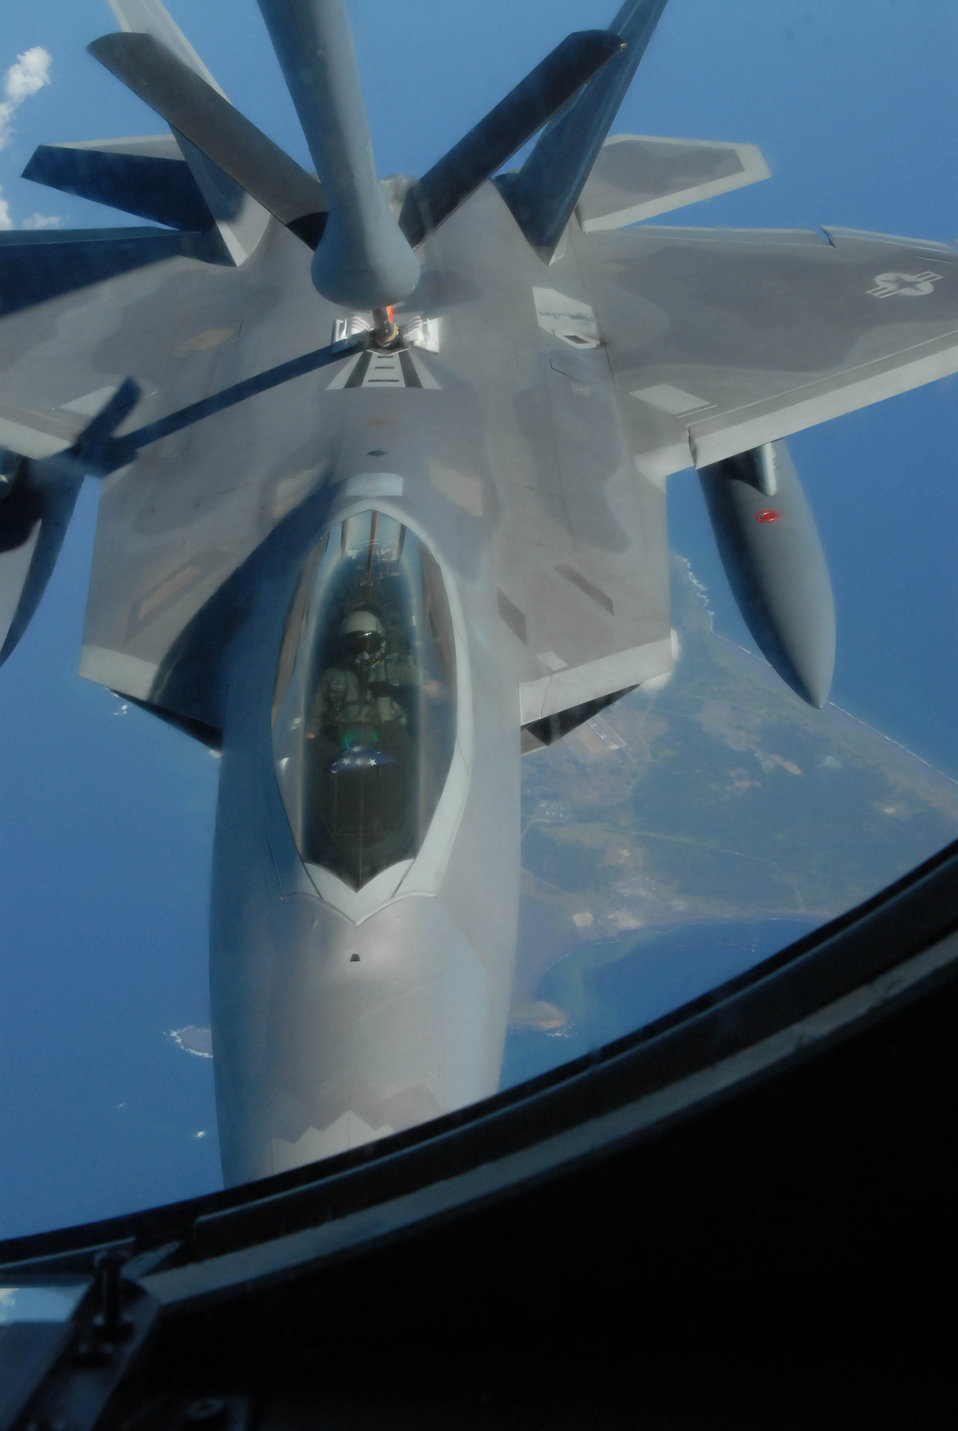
Refueling the Raptor

An F-22 Raptor receives fuel from a 909th Air Refueling Squadron KC-135 Stratotanker over Iwo Jima Feb. 18 while en route to Kadena Air Base, Okinawa, Japan. This was the first-ever overseas deployment of the F-22. F-22s from the 27th Fighter Squadron at Langley Air Force Base, Va., are deployed to Kadena AB as part of an Air Expeditionary Force rotation.